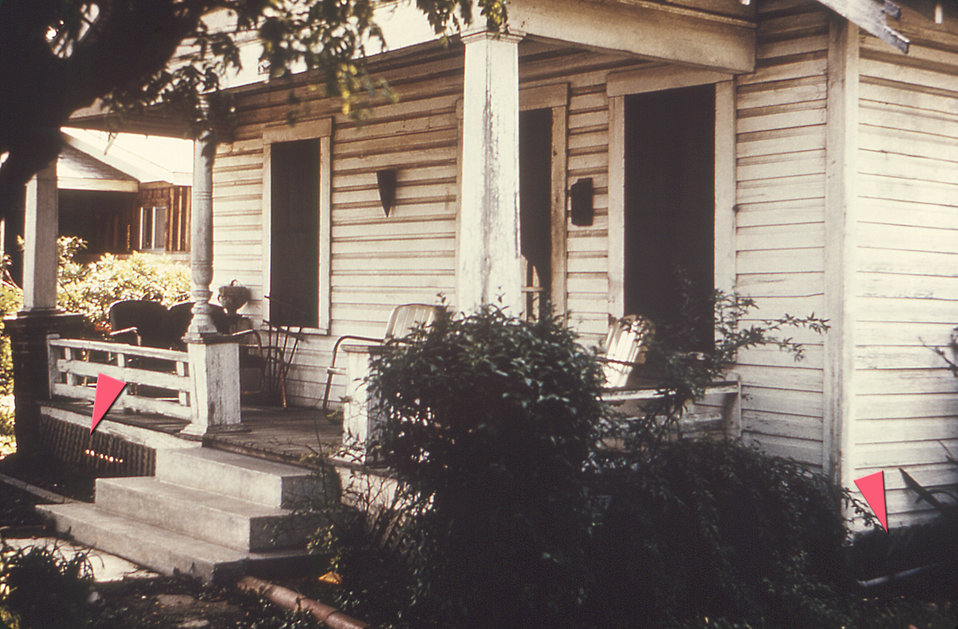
Indicated by red arrows, note the wooden lattice located beneath the front porch, and underneath the house, which served as an excellent 'resting station' for adult mosquitoes.